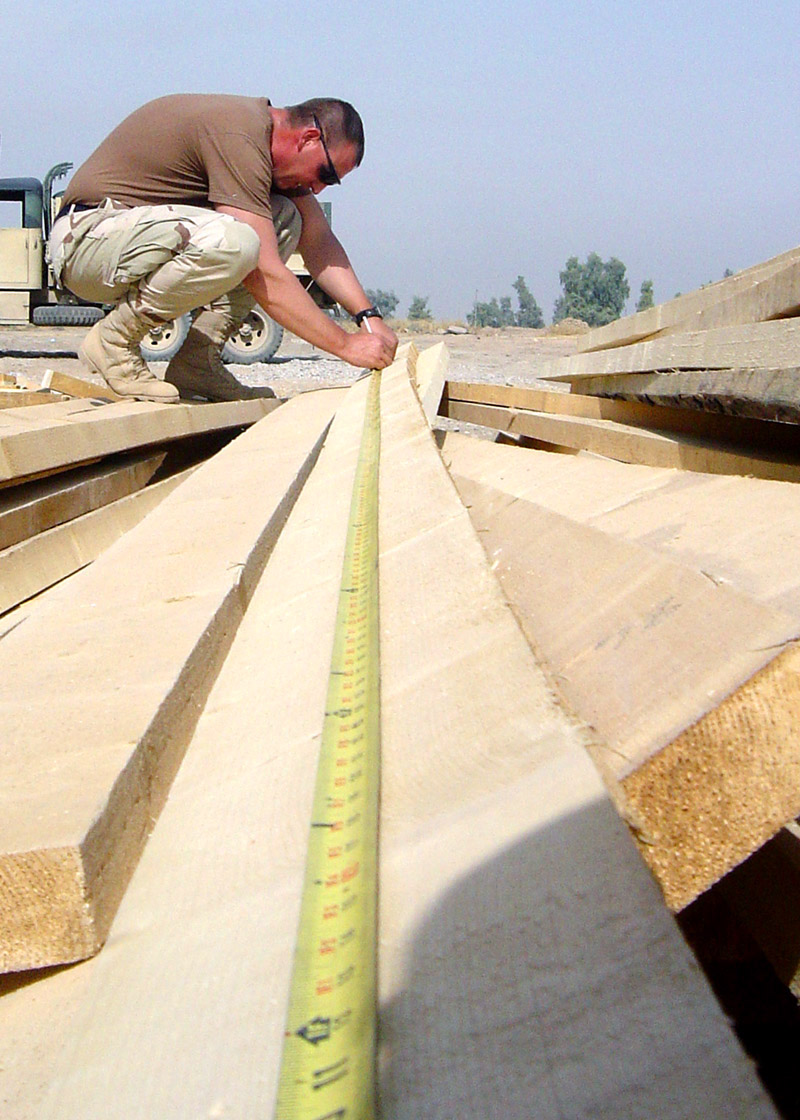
Sizing it up

KIRKUK AIR BASE, Iraq -- Staff Sgt. Terry Wallace measures a board for a patio being built for the new armory here. Wallace is deployed to the 506th Expeditionary Security Forces Squadron here supporting Operation Iraqi Freedom.